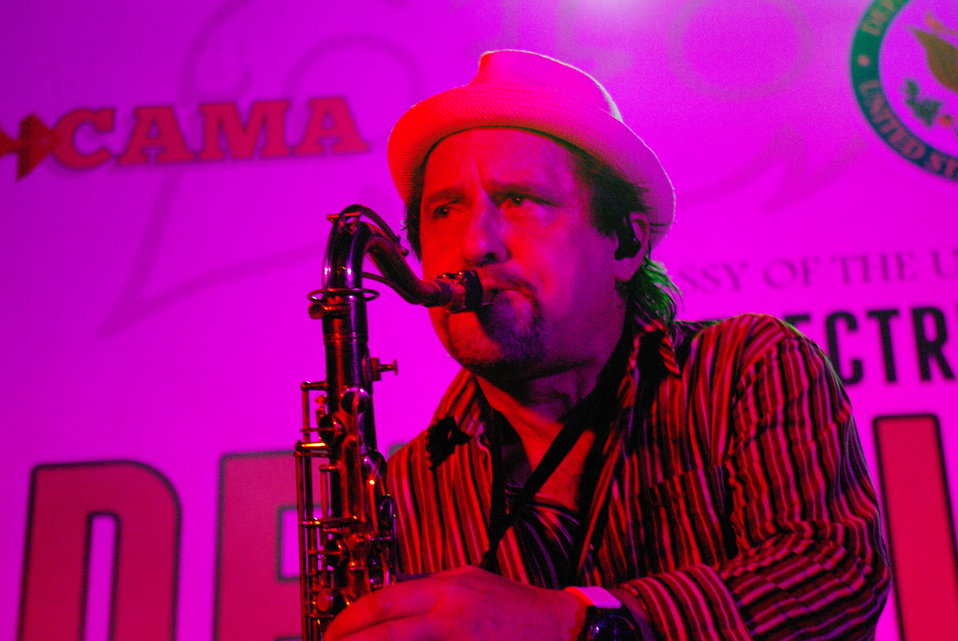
PEPFAR, U.S. Embassy Host Dengue Fever Concert in Hanoi